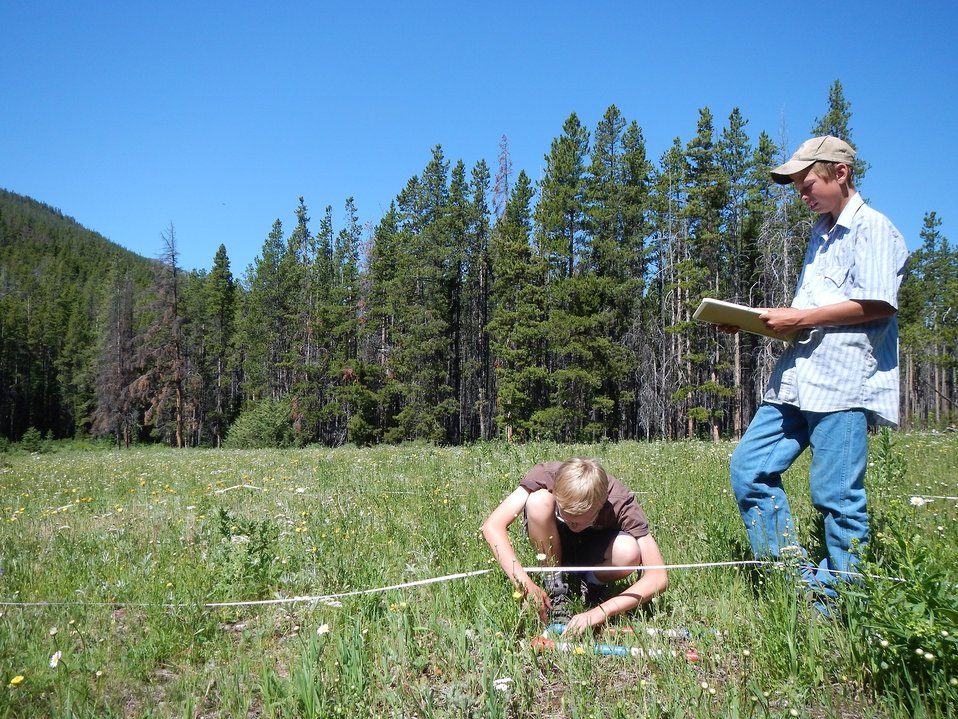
Youth Forest Monit. Photo 3

A student and two field instructors with the Youth Forest Monitoring Program measure rocks, and monitor temperatures in a stream near Webb Lake in the Scapegoat Wilderness.